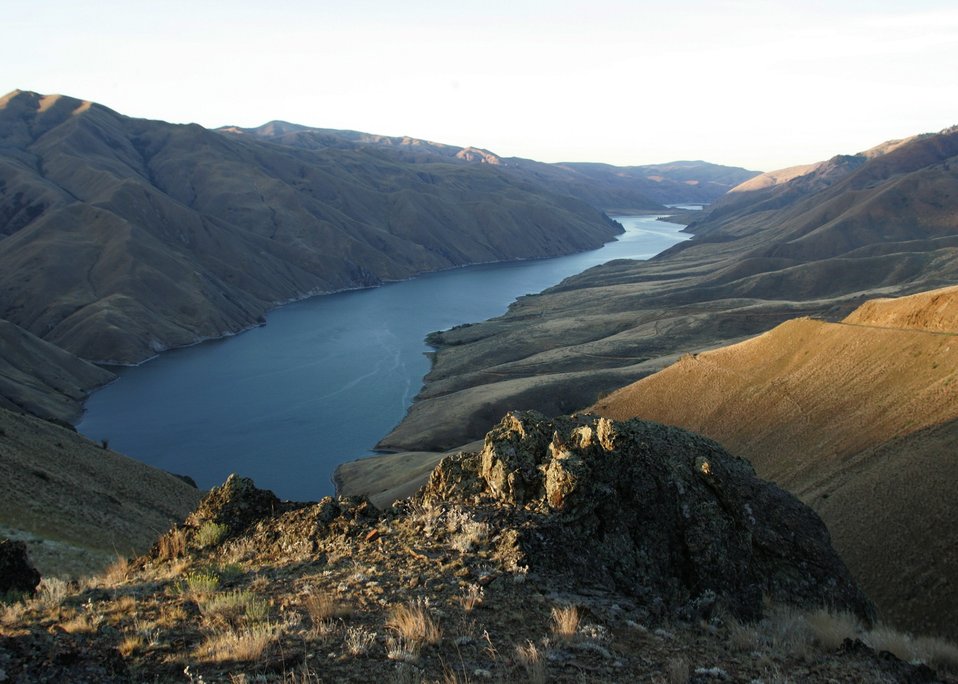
Sunrise on the Snake River Backcountry Byway.